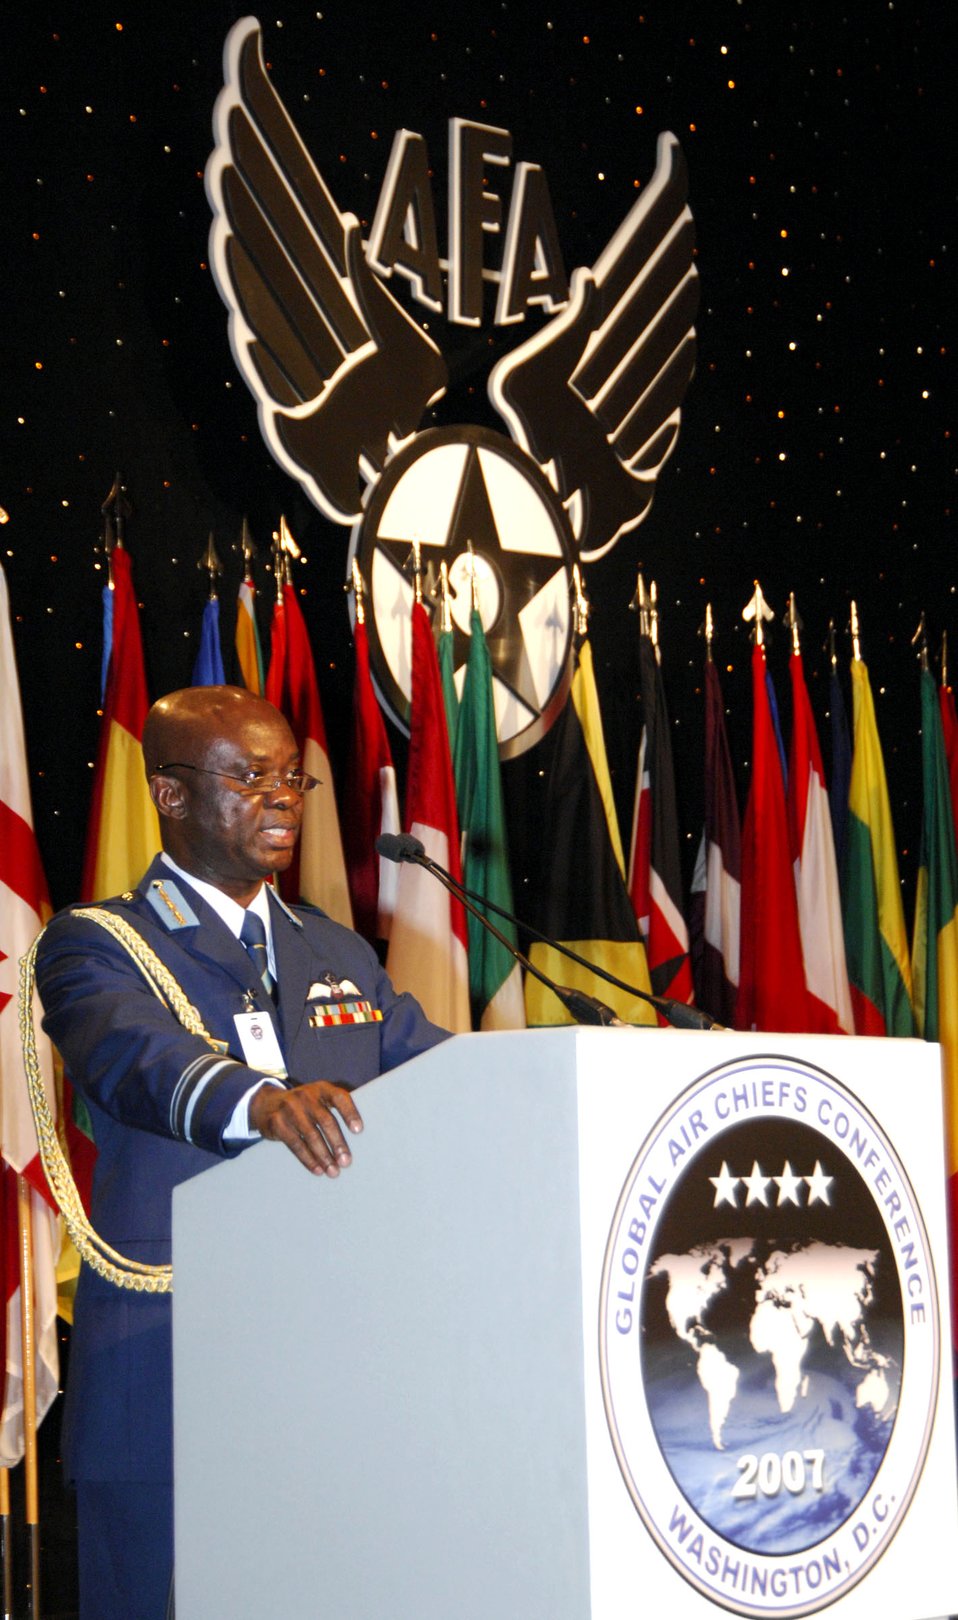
Global air chiefs gather for conference

Ghana Vice Air Chief Marshall Julius O. Boateng addresses attendees Sept. 24 during the Global Air Chiefs Forum, a session during the Global Air Chiefs Conference in Washington, D.C. More than 90 air force chiefs of staff from around the globe attended the conference hosted by the U.S. Air Force.